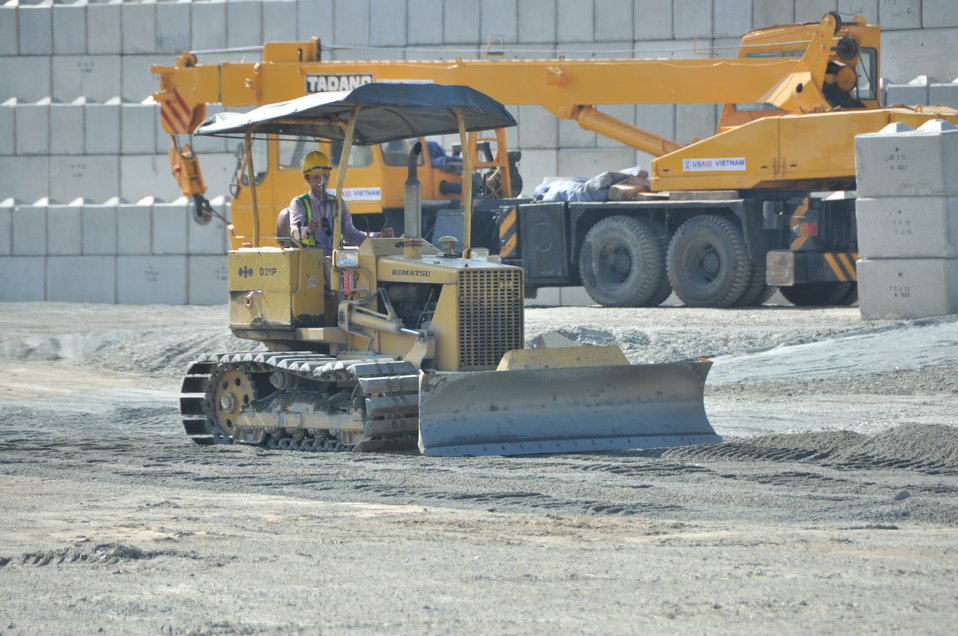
Site construction at the Environmental Remediation of Dioxin Contamination at Danang Airport

Progress at the Danang Airport remediation site
April 23, 2013